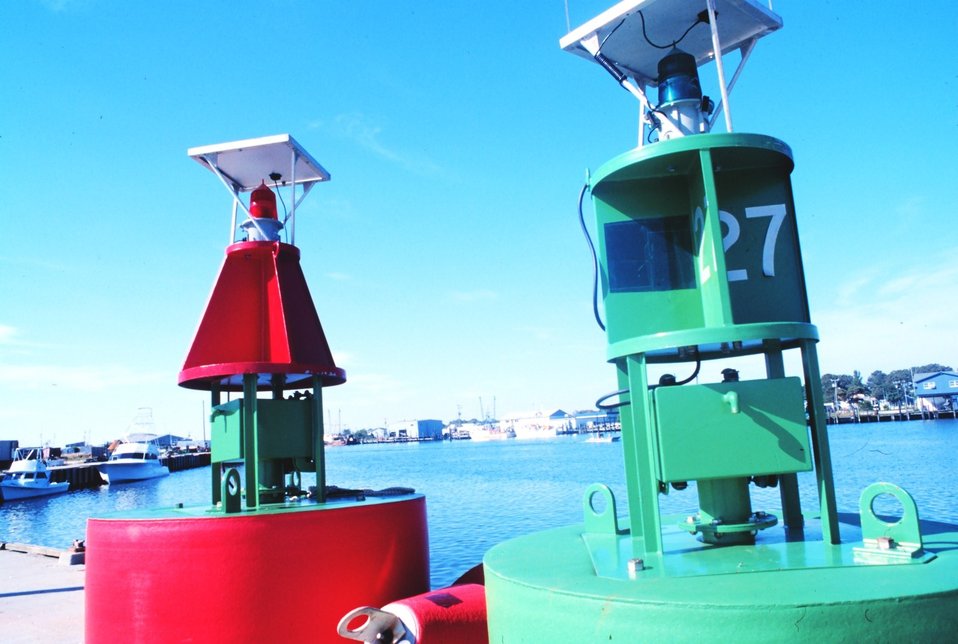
Buoys ready to guide mariners at the Coast Guard Station